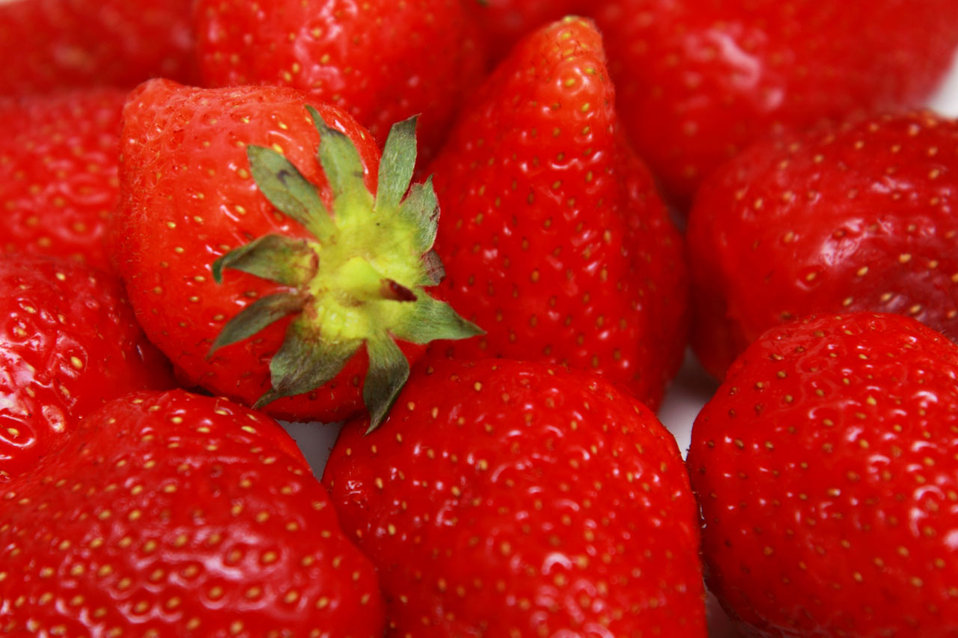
Strawberry background

Fresh strawberry background.